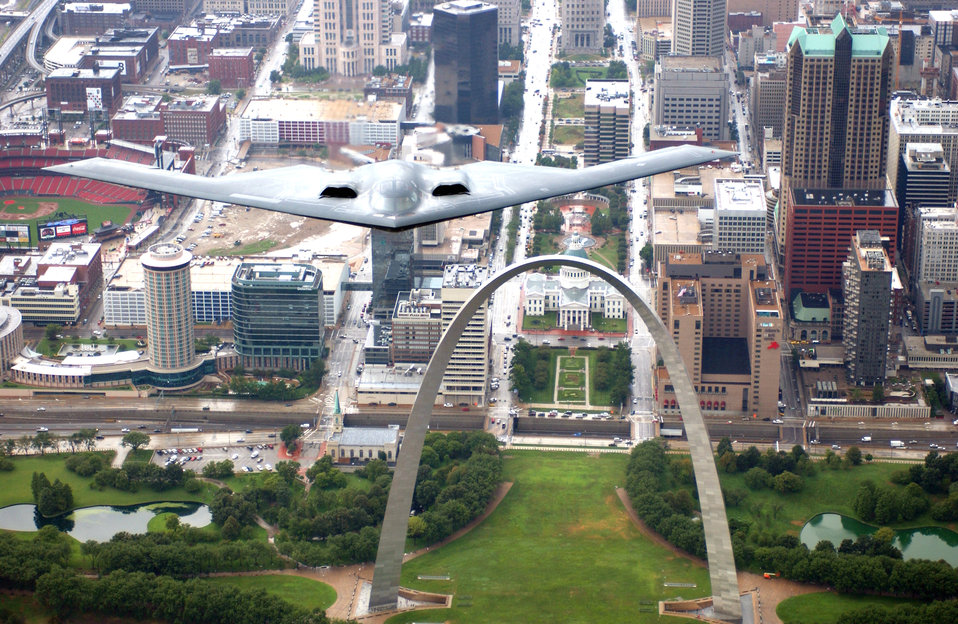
B-2 Spirit flies over St. Louis

A B-2 Stealth bomber from the 509th Bomb Wing at Whiteman Air Force Base, Mo., flies over the St. Louis Arch on Aug. 10. The B-2 flyover was one of several events celebrating Air Force Week in St. Louis.